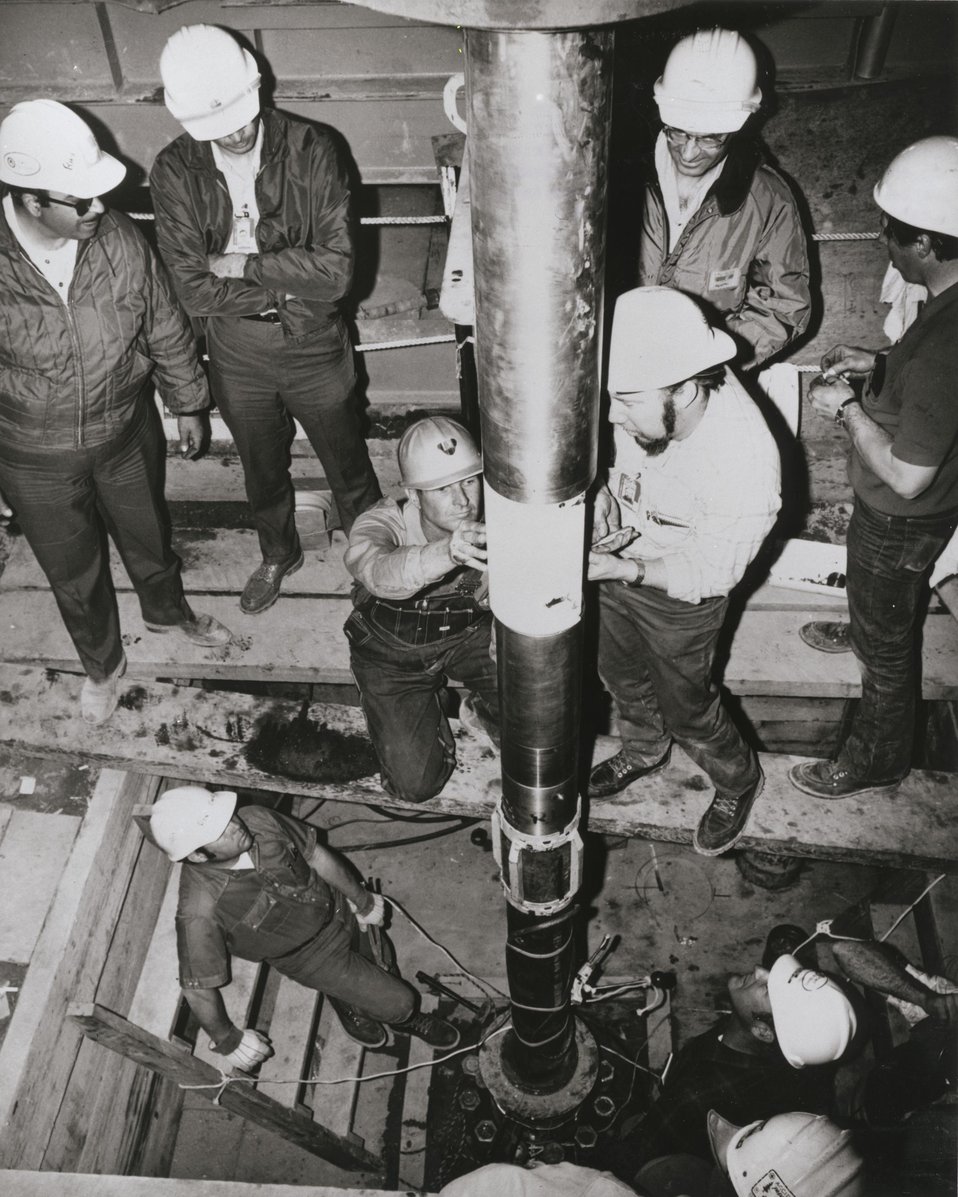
Mechanical technician Larry Marah (right center, beard) connects an external armored firing cable to the second of three 30-kiloton nuclear explosives to be used in the joint government-industry Project Rio Blanco. c. 1973